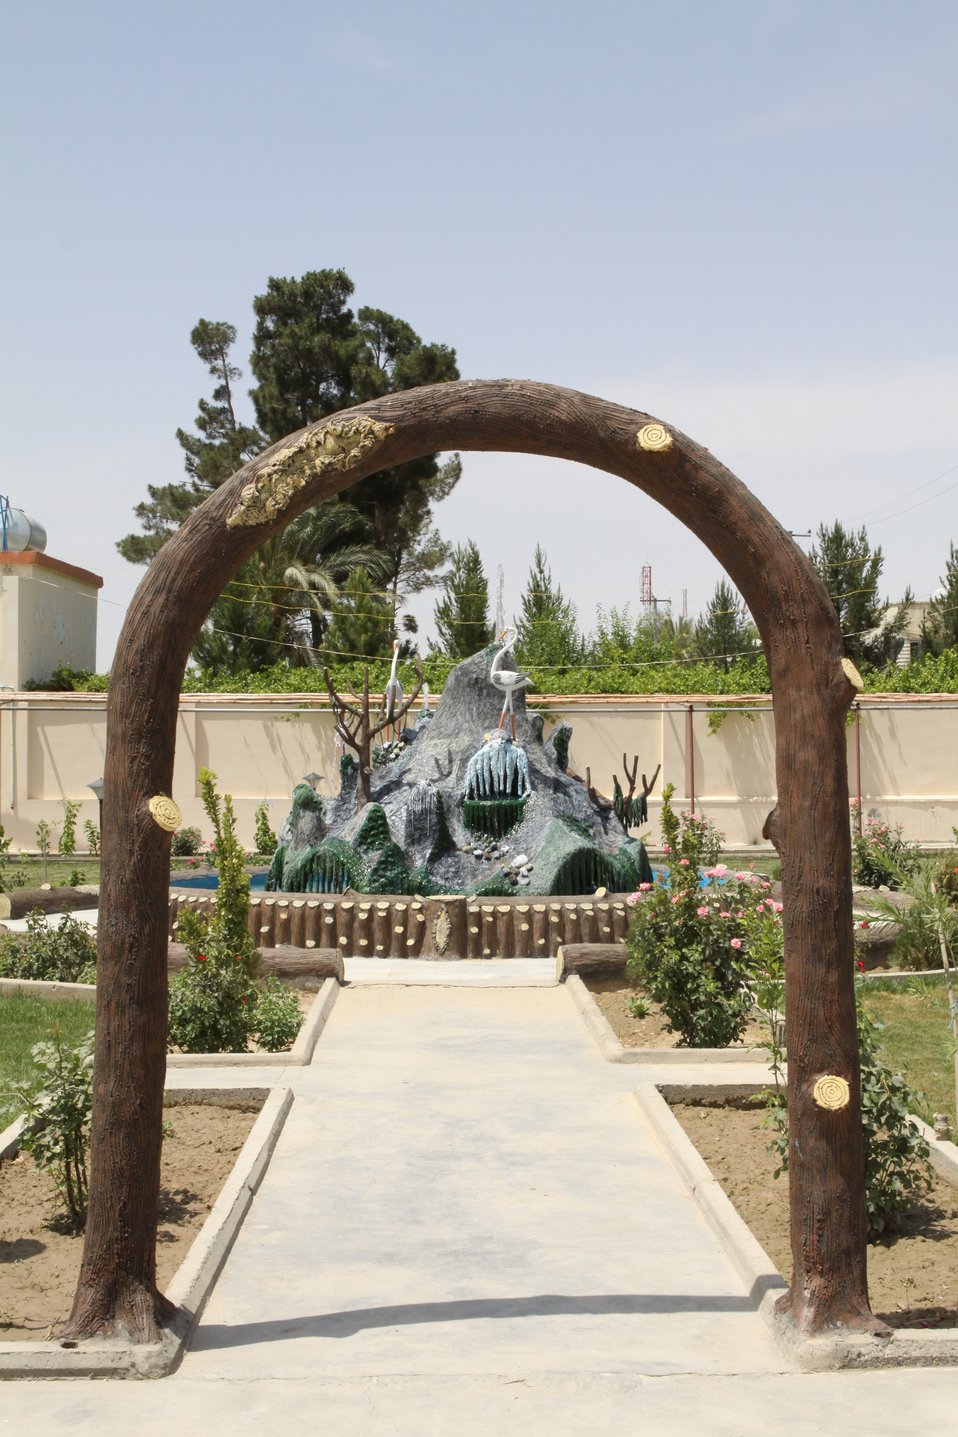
Bolan Poultry Farm